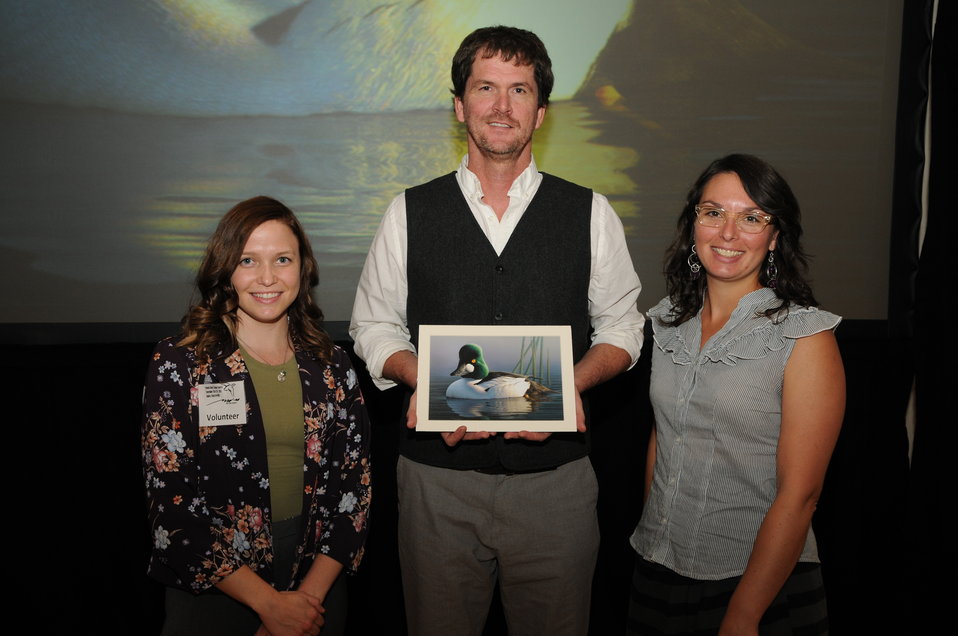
Everyone Loves a Winner

The U.S. Fish & Wildlife Service sponsored the 2012 Federal Duck Stamp Art Contest September 28 and 29 in Ogden, Utah, at Weber State University. A panel of five judges was responsible for choosing the art work used to design the 2013-2014 Migratory Bird Hunting and Conservation Stamp.